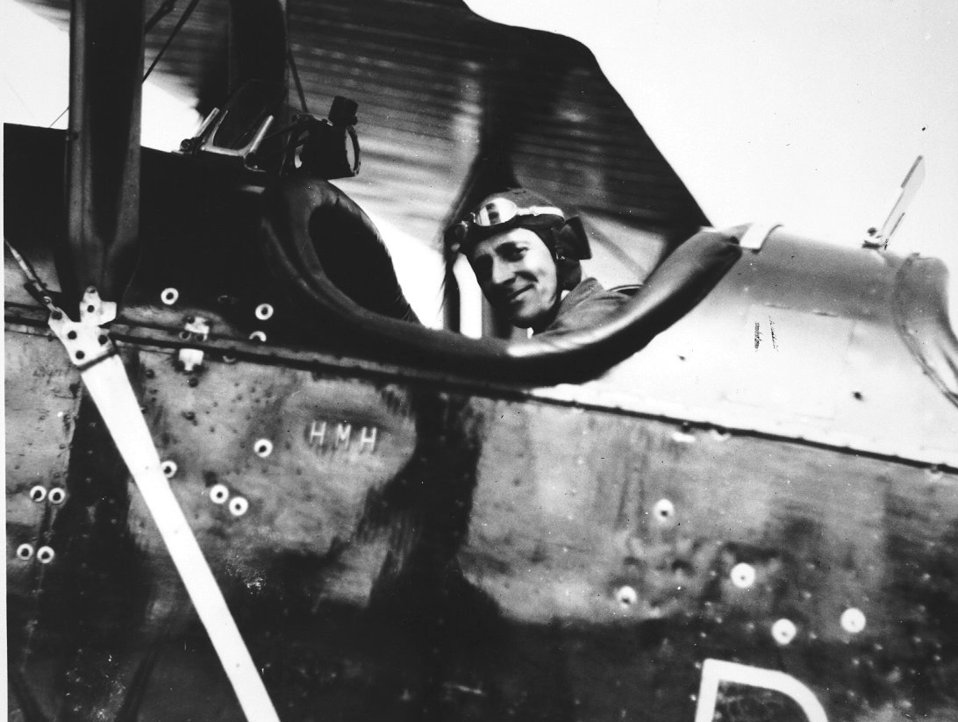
Horace Hickam

Lt. Col. Horace Hickam sits in a Curtiss JN-4 Jenny. Hickam Air Force Base was named for Colonel Hickam May 31, 1935. The colonel was killed in a plane crash Nov. 5, 1934.